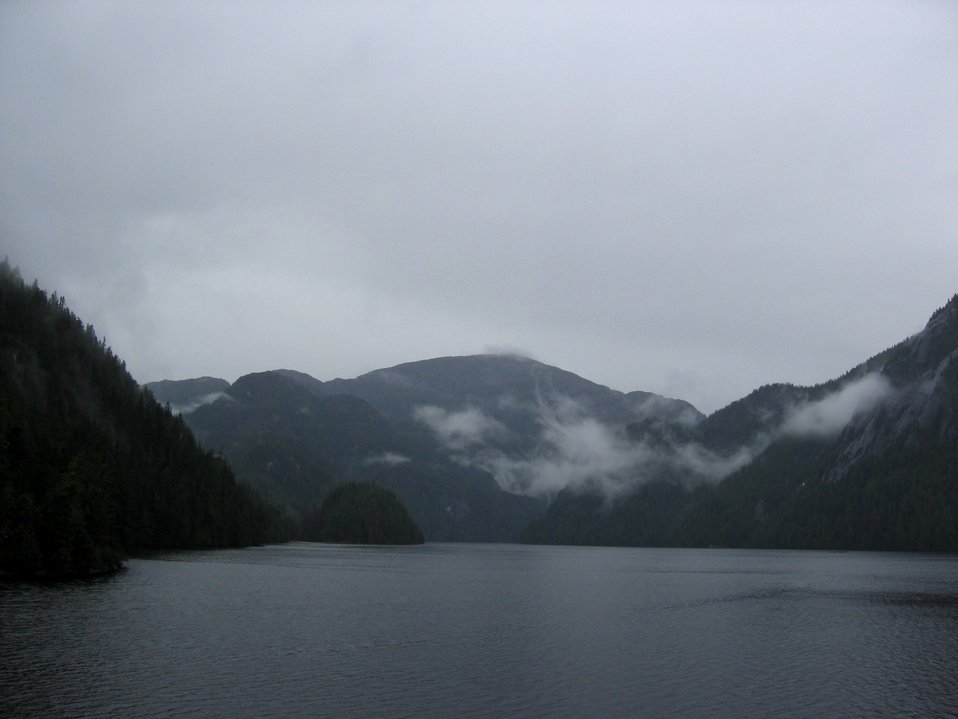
A maze of mountains and water.